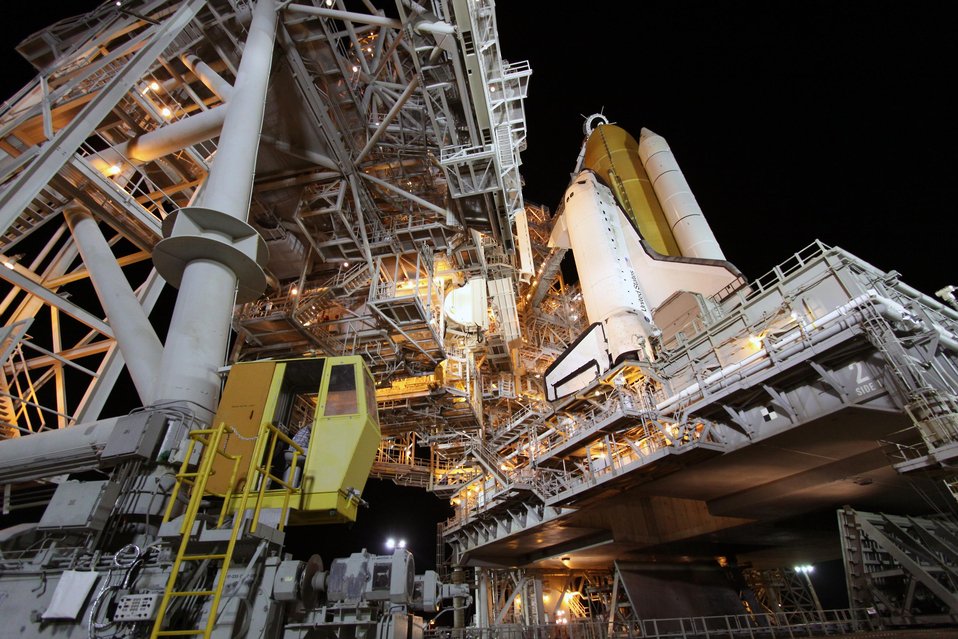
STS-133 crew announced

Space Shuttle Discovery, mission STS-128, sits on the launch pad Aug. 24, 2009, prior to liftoff. NASA officials have announced the crew for the final Shuttle mission, STS-133, which is targeted for launch in September 2010. The crew will include three Air Force astronauts.